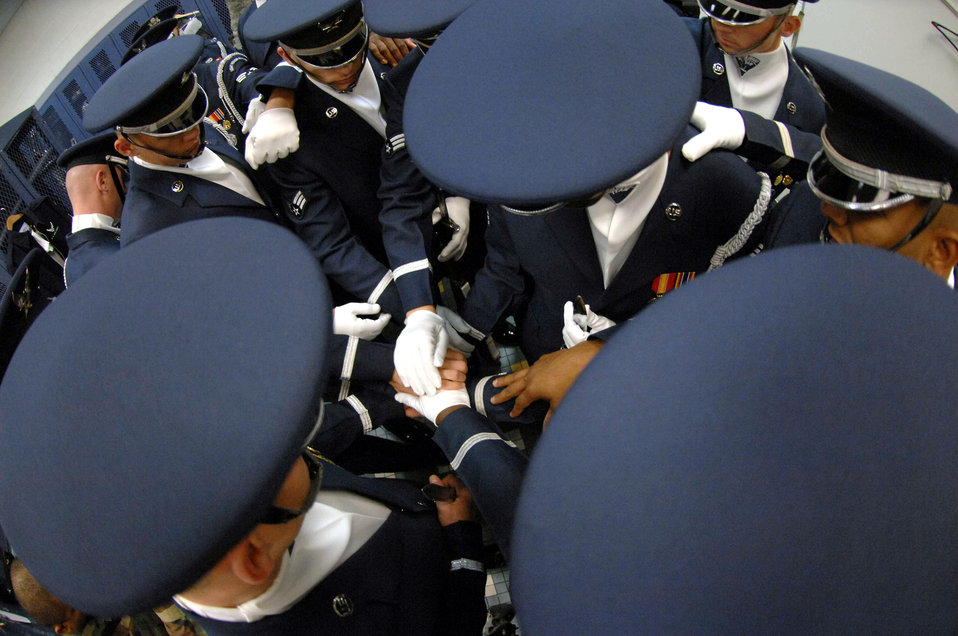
Vegas performance

Members of the Air Force Honor Guard drill team gather for a word of prayer before their performance at the Palo Verde High School Gym Nov. 6 in Las Vegas. The Air Force Honor Guard drill team is in Las Vegas for 14 performances throughout the military and civilian community. They will be performing during the Air Force 60th Anniversary Air Show and opening for Tops In Blue.